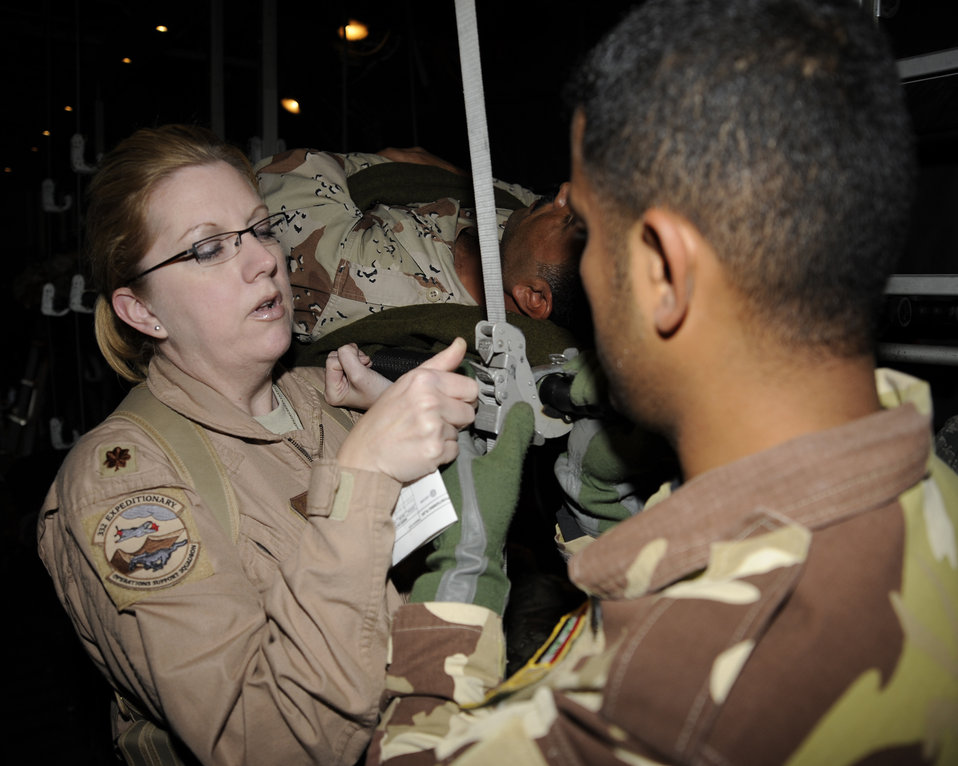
Iraqi medics complete aeromedical evacuation course

Maj. Bonnie Bosler shows an Iraqi air force medic how to secure a litter for transport in a C-130 Hercules aircraft at New Al-Muthana Air Base, Iraq, Dec. 3. Iraqi airmen attended a 12-day aeromedical evacuation basics course that covered reconfiguring a cargo aircraft into a medical patient aircraft, creating a load plan of patients and coordinating with ground support to load patients. Major Bosler is a flight nurse instructor from the 332nd Expeditionary Aeromedical Evacuation Flight.